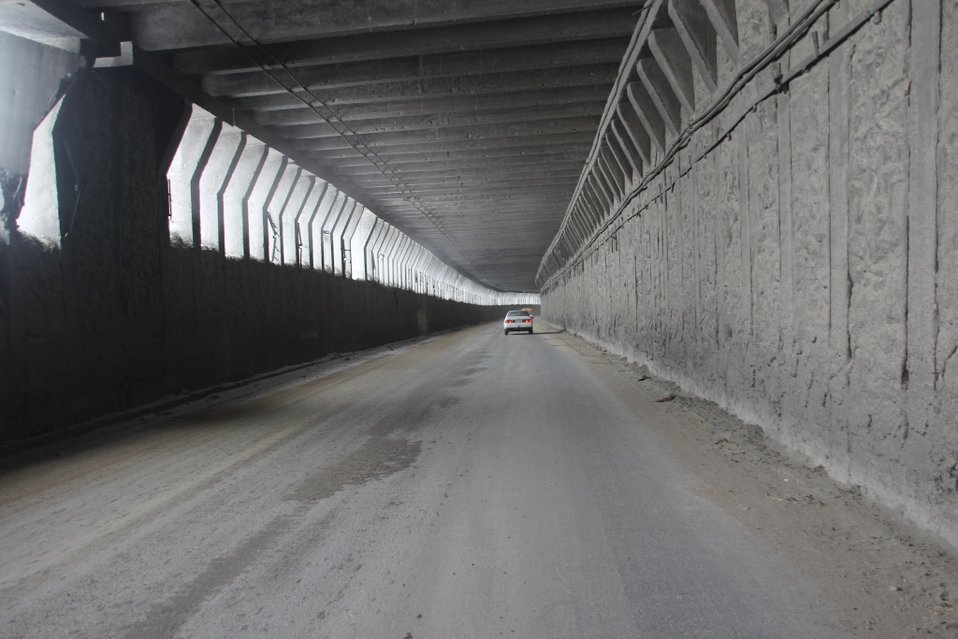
U.S. Army Corps of Engineers recently repaved the road inside the Salang tunnel (Picture taken on November 24, 2013)